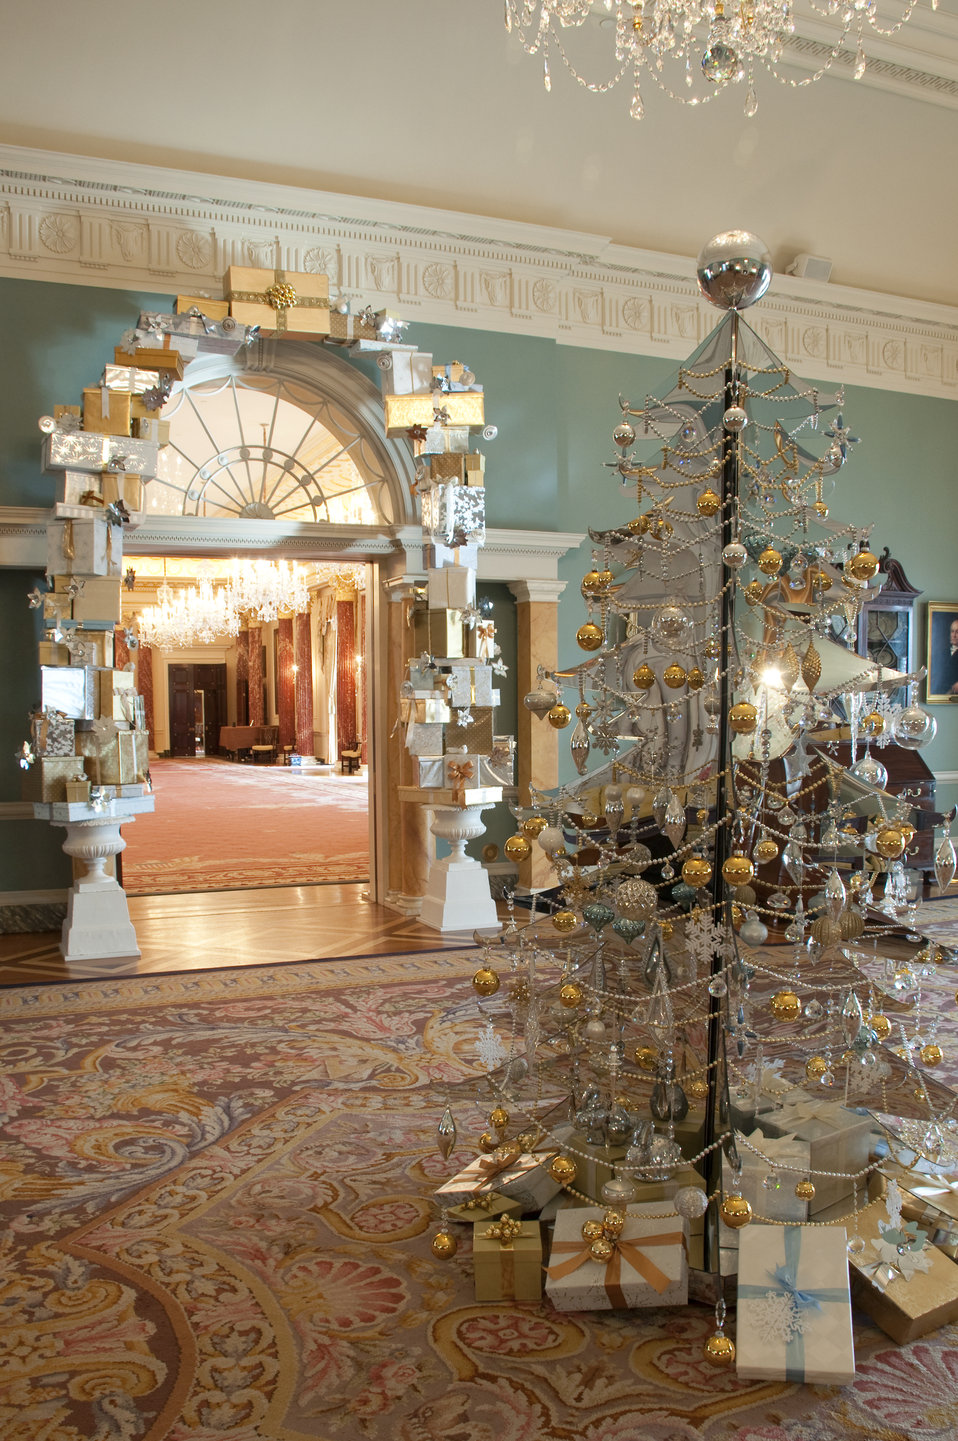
The U.S. Department of State Partners With Time Inc. and InStyle To Decorate the Thomas Jefferson State Reception Room

The U.S. Department of State partners with Time Inc. and InStyle to decorate the Diplomatic Reception Rooms for the Holidays in December 2010. Pictured in this photo is the Thomas Jefferson State Reception Room.